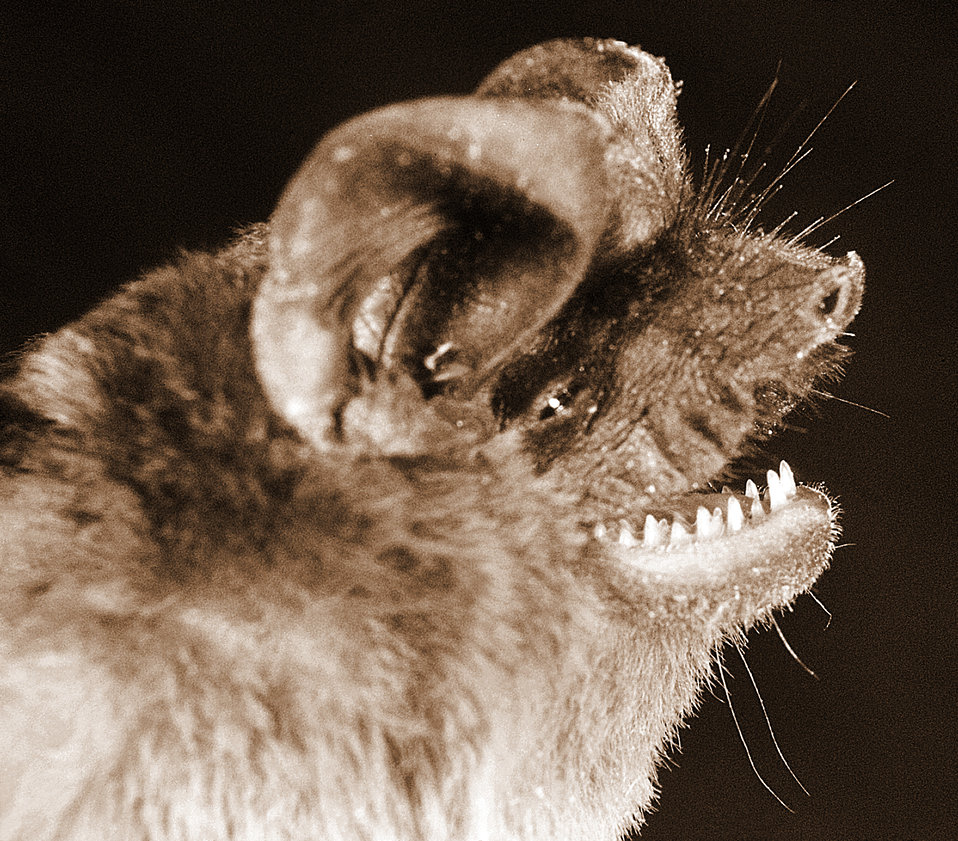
This image depicts a right lateral (side) view of a Jamaican fruit bat's, Artibeus jamaicensis, head region. See PHIL 15132, for a full-color version of this same image.